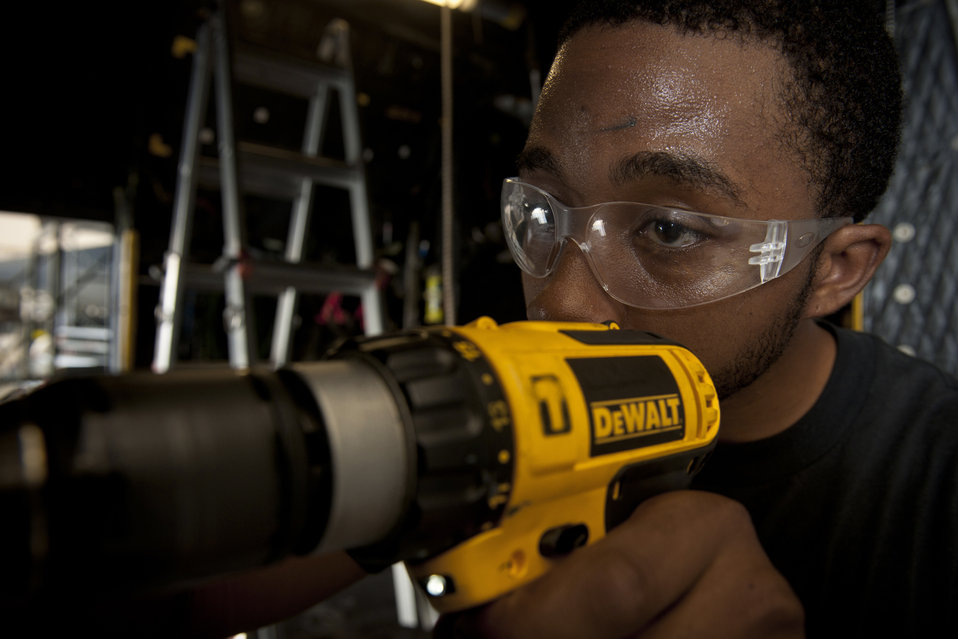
Inspection at Moody

Staff Sgt. Ron Goldon drills into a side door panel during an HC-130P Combat King inspection at Moody Air Force Base, Ga. Sergeant Goldon is an aircraft structural maintenance journeyman assigned to the 23rd Equipment Maintenance Squadron.